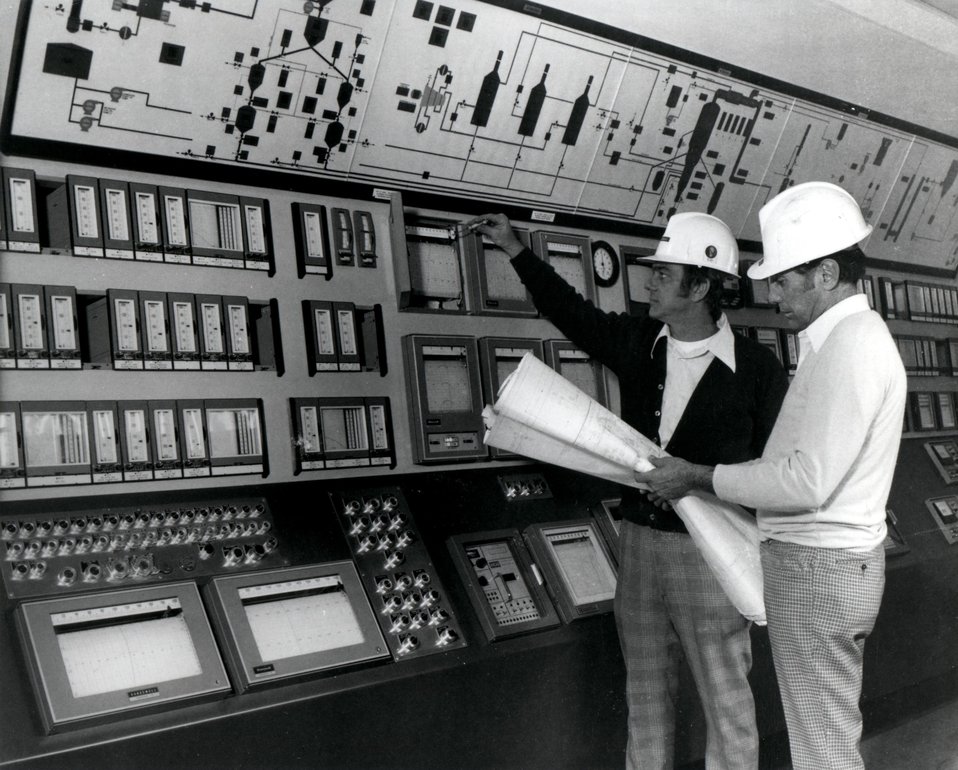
Technicians check design specs in the control room of the Pittsburgh Energy Research Center's five-megawatt thermal (12 tons of coal per day) magnetohydrodynamics (MHD) gasifier-combuster. Circa 1977.